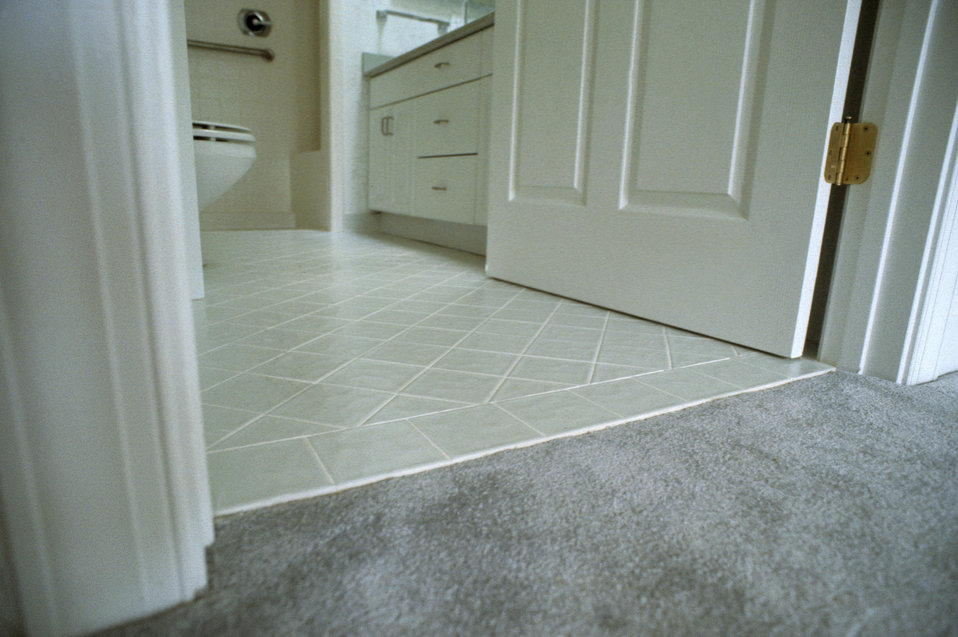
This 1997 image was one of three (see PHIL# 9263 - 9265) the theme of which focused on the areas of a residential environment where one would encounter transitional changes on floor surface levels. When floor designs implement a minimization in floor height at transition points, unimpeded travel is facilitated for those using wheelchairs, or experience abulatory difficulties. In this particular image, the transitional point between a tiled versus carpeted floor surface is highlighted, and depicted a relatively even transition, which will allow for a smooth excursion for wheelchairs, as well as crutches or canes.